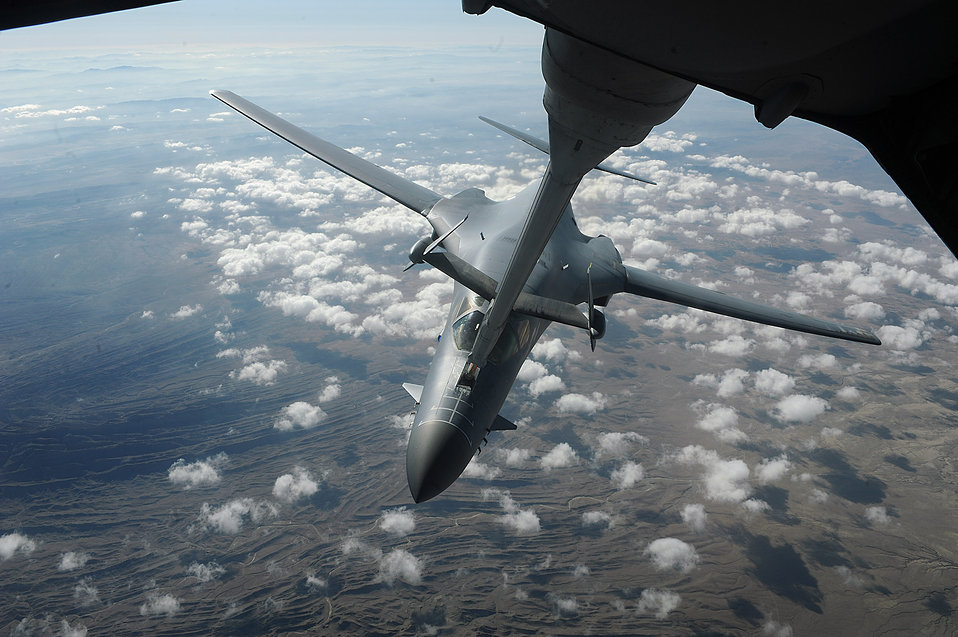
Feb. 18 airpower summary: B-1Bs provide overwatch

A B-1B Lancer receives fuel from a KC-10 Extender over Afghanistan. B-1Bs fly close-air-support missions for both Operation Enduring Freedom and Operation Iraqi Freedom.